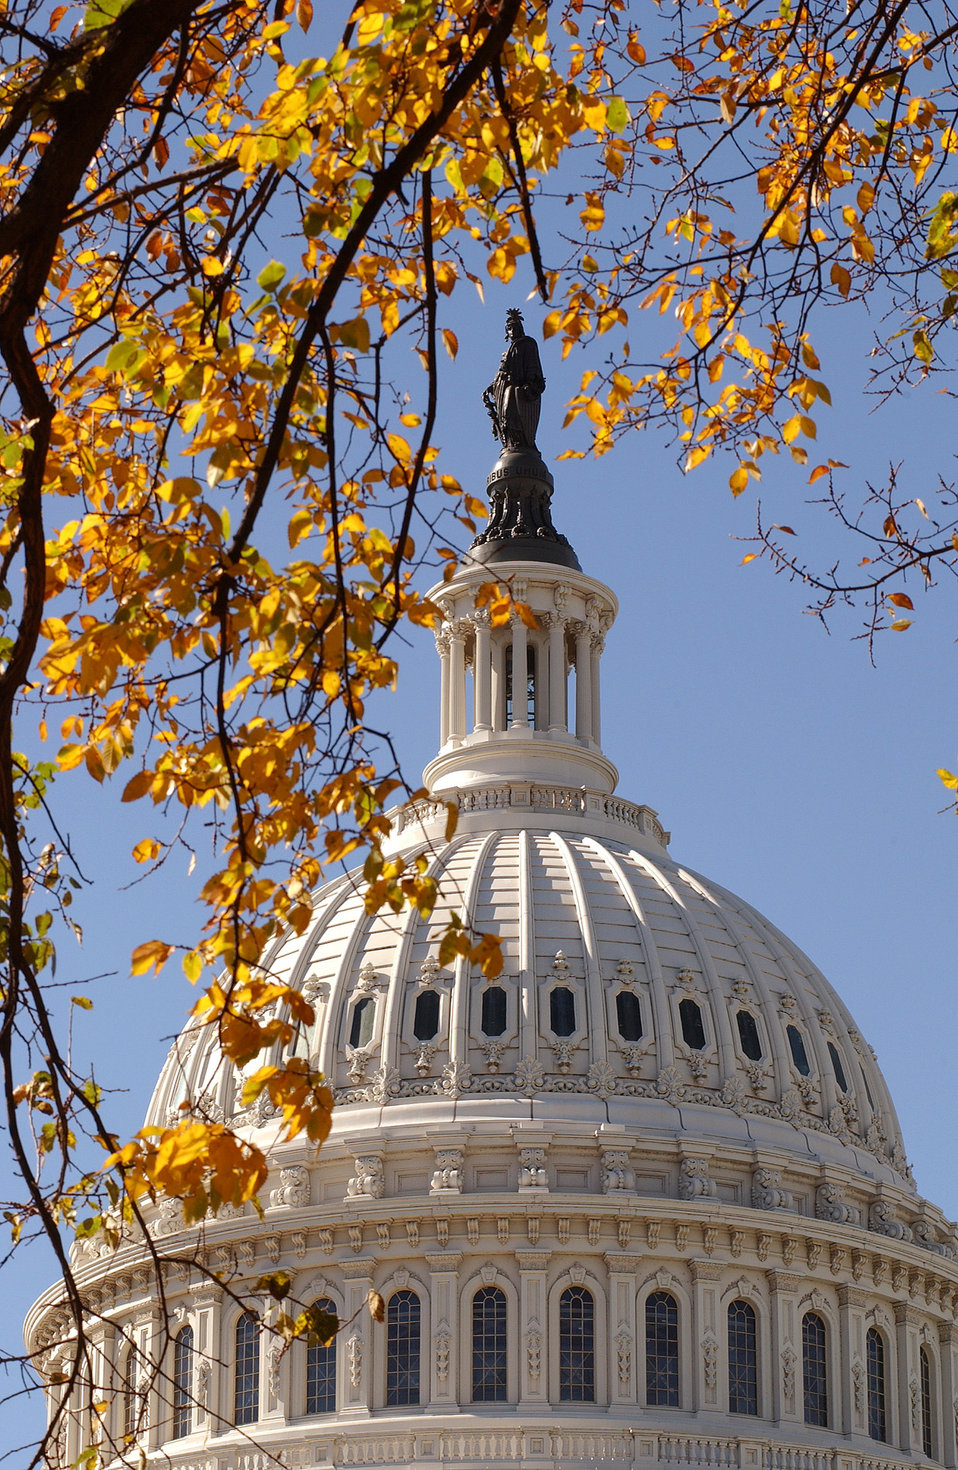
East Front view of upper section of Capitol dome with fall foliage

October 2001